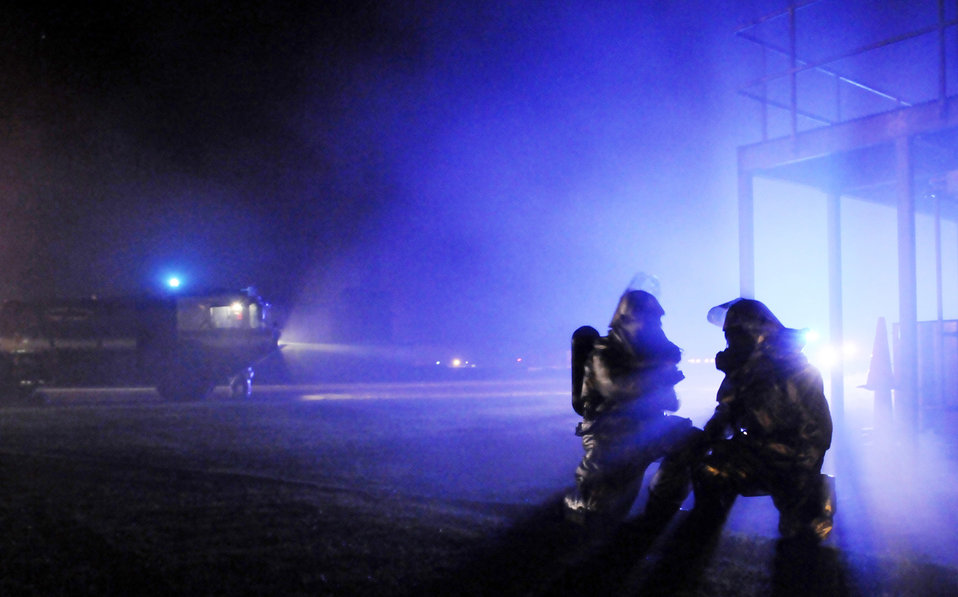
Here's the plan

Two firefighters discuss a plan of attack in a simulated fire as smoke fills the air July 23 at Royal Air Force Mildenhall, England. The fire scenario is part of a phase-two exercise conducted in preparation for an operational readiness inspection later this year. The firefighters are assigned to the 100th Civil Engineer Squadron.